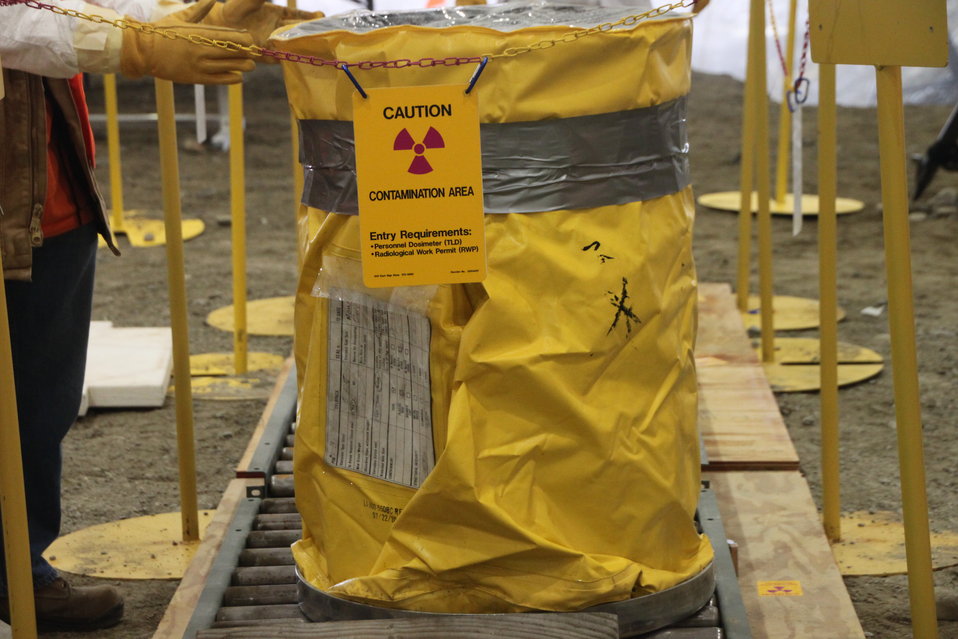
Richland Recovery Act Cleanup Work